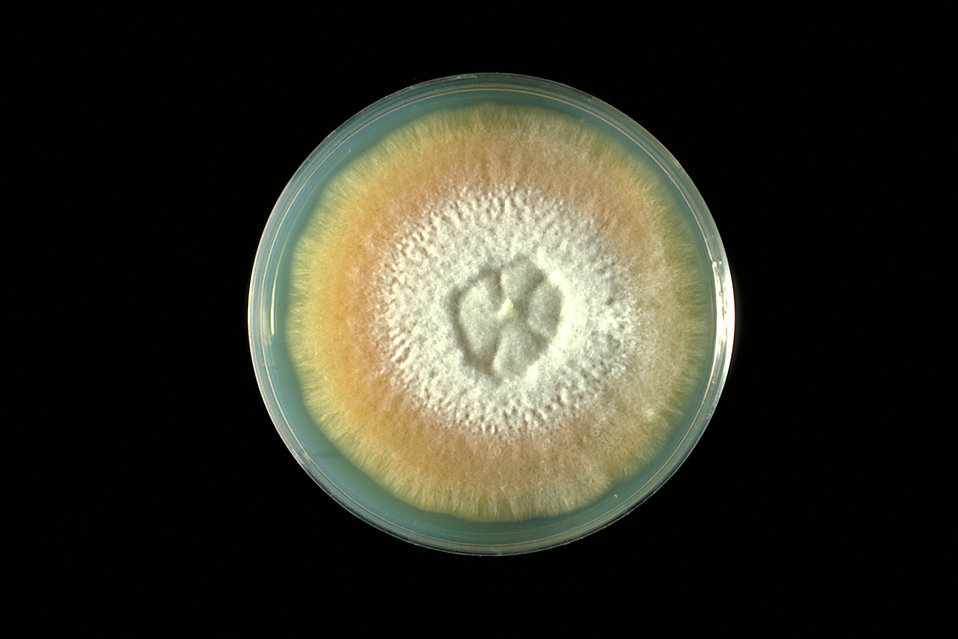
Fusarium verticillioides fungus

This is a Sabouraud's agar plate culture upon which is growing the fungus Fusarium verticillioides.